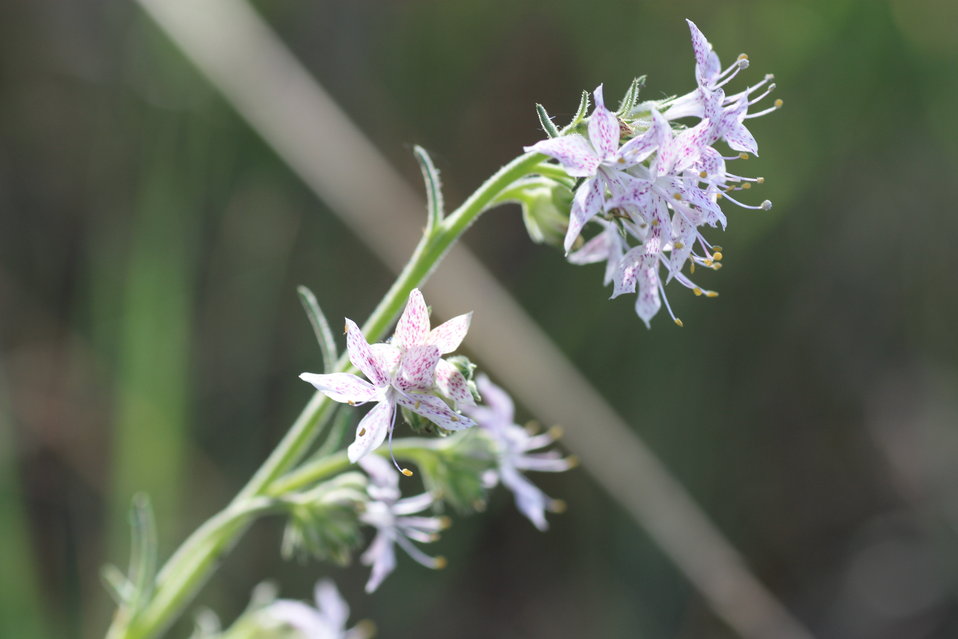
Pagosa Skyrocket

The Pagosa skyrocket’s dense clusters of white colored flowers with pink or purple spots make it an appealing flower for humans and pollinators alike.

Pagosa skyrocket (Ipomopsis polyantha) is an extremely rare plant endemic to two populations on Mancos shale outcrops near the Town of Pagosa Springs in Archuleta County, Colorado. This member of the phlox family (Polemoniaceae) grows as a rosette for one to many years; then flowers, produces seeds, and dies in its final year of life. In June and July when the species is flowering, numerous bees and other insects can be seen visiting its clusters of white flowers with small purple spots. These pollinators are essential to the survival of the species and are comprised primarily of native ground-dwelling solitary bees. Pagosa skyrocket habitat is unique, being comprised of barren shales where conditions are harsh and difficult for growth.